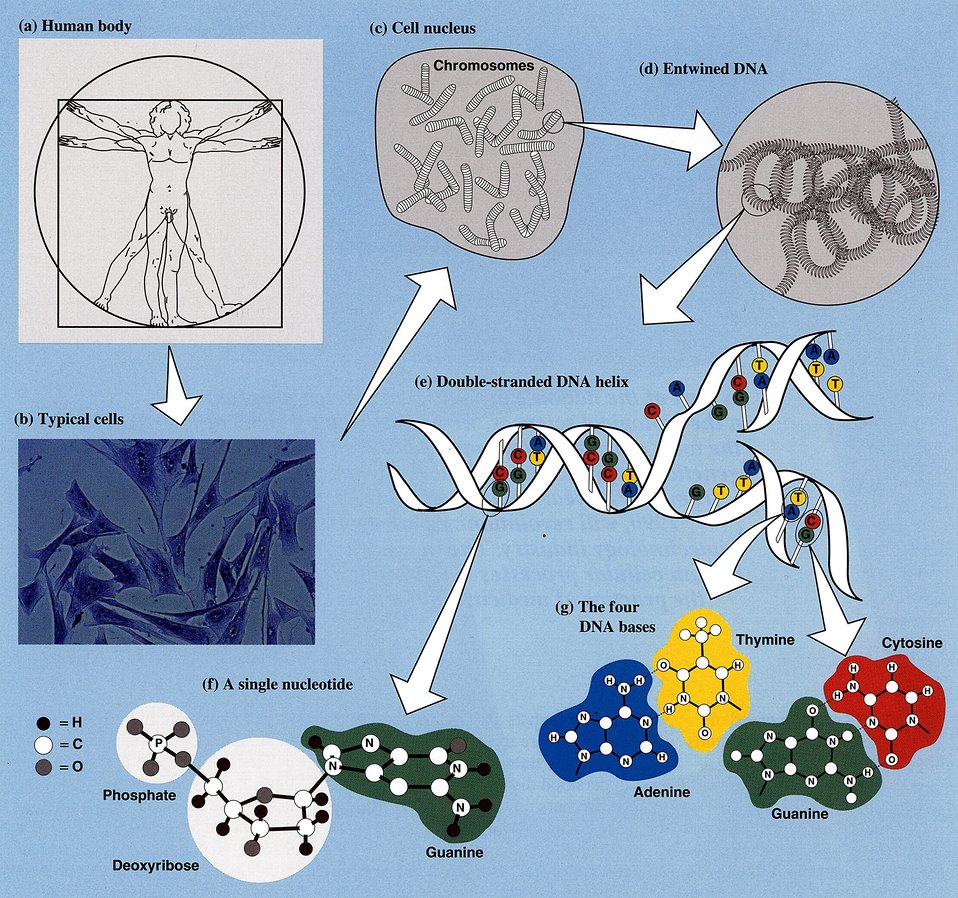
The structure of DNA and genetic information.